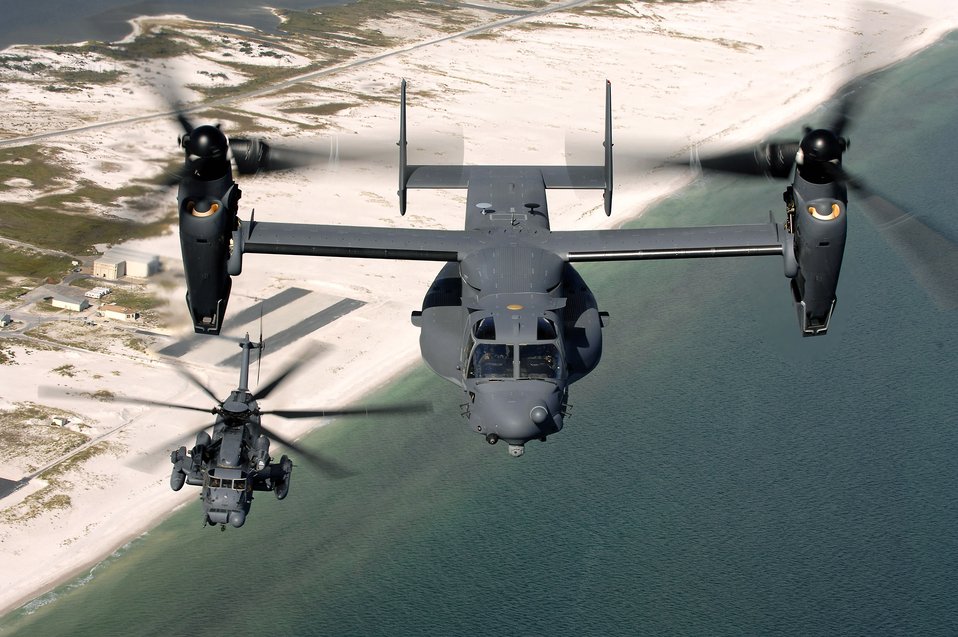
Stepping up

A CV-22 Osprey and an MH-53 Pave Low fly over the coastline Aug. 20 near Hurlburt Field, Fla. The CV-22 will take over Air Force Special Operations Command helicopter missions when the MH-53 retires in October.